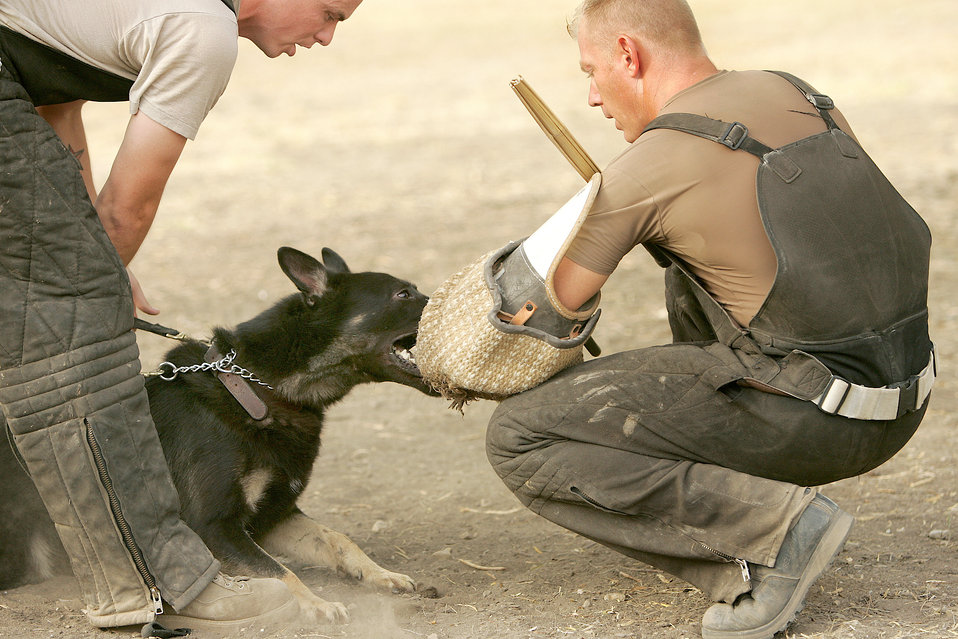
Total Force MWD training

Army Staff Sergeant Chuck Bench, holds his military working dog Dino while Tech. Sgt. Nicholas Gorham trains Dino to bite the wrap in the correct area Aug. 29 at Lackland Air Force Base, Texas. The NCOs are with the 341st Training Squadron at Lackland.